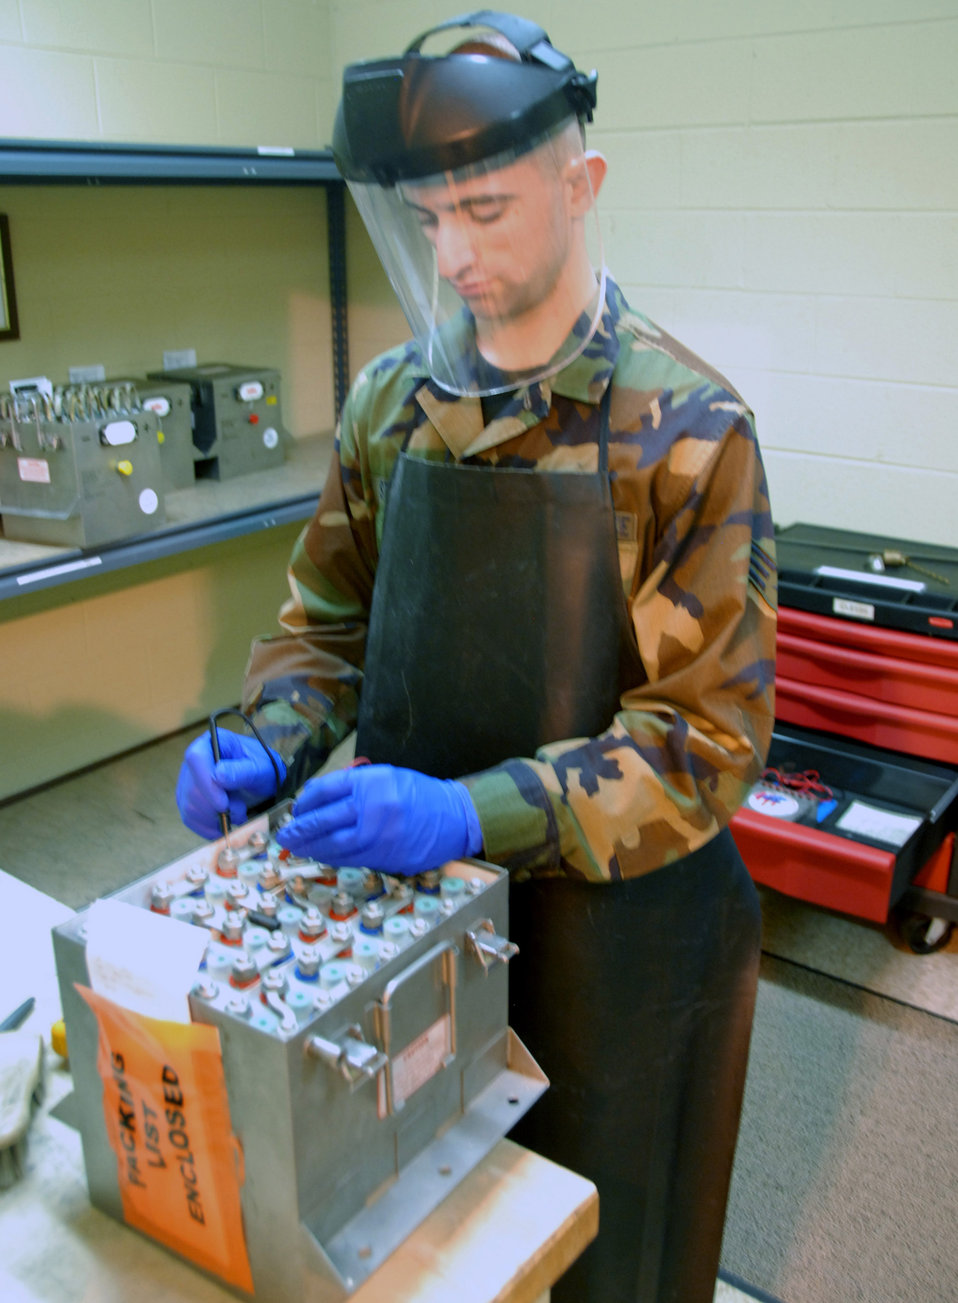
Life-risking Airmen save mission, assets

Senior Airman David Stricker performs a voltage check on an aircraft battery in the 437th Maintenance Squadron electrical and environmental battery shop Feb. 11. The shop is responsible for maintaining all the C-17 Globemaster III batteries at Charleston Air Force Base, S.C. Airman Stricker is an electrical and environmental systems journeyman with the 437th MXS.